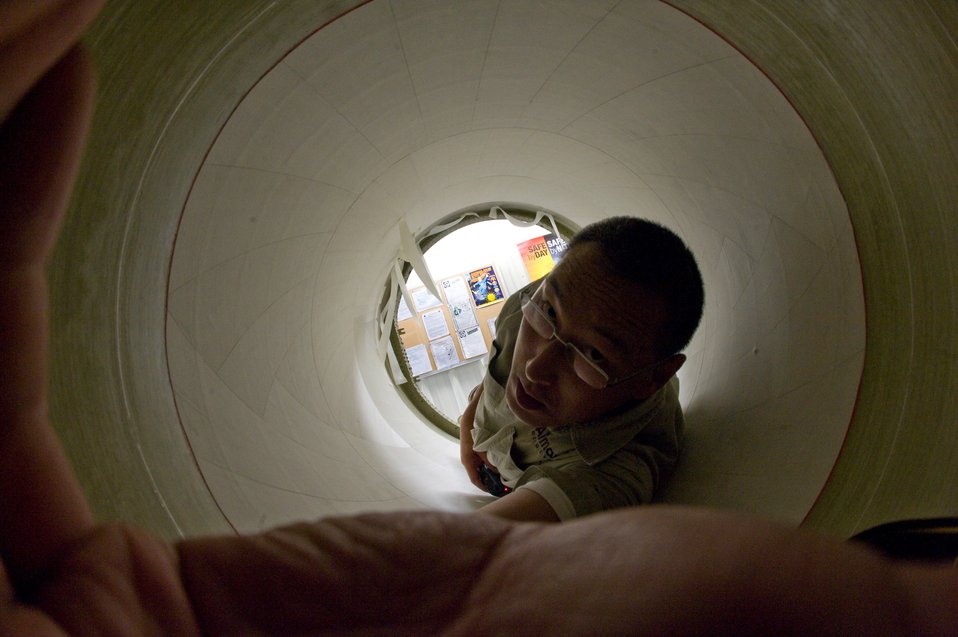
Wind power at Arnold AFB

Lance Cheung set ups a remote camera to capture the custom application of specialized fiberglass tape to the interior of an F-15 Eagle radome Oct. 7, 2009, at Arnold Air Force Base, Tenn. Mr. Cheung is on assignment for Airmen magazine and is a photojournalist with Defense Media Activity - San Antonio.